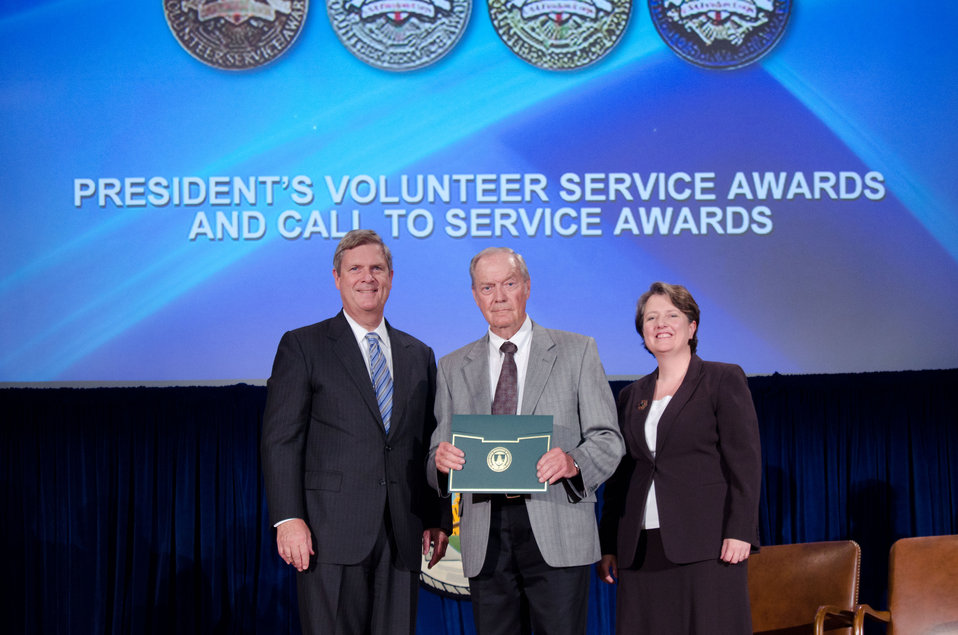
Agriculture Secretary Tom Vilsack (l) and Deputy Secretary Kathleen Merrigan (r), presents the President’s Volunteer Service Awards and Call to Service Award to James Mower, Forest Service. On Wednesday, September 14, 2011 in the Jefferson Auditorium at the US Department of Agriculture in Washington, DC.